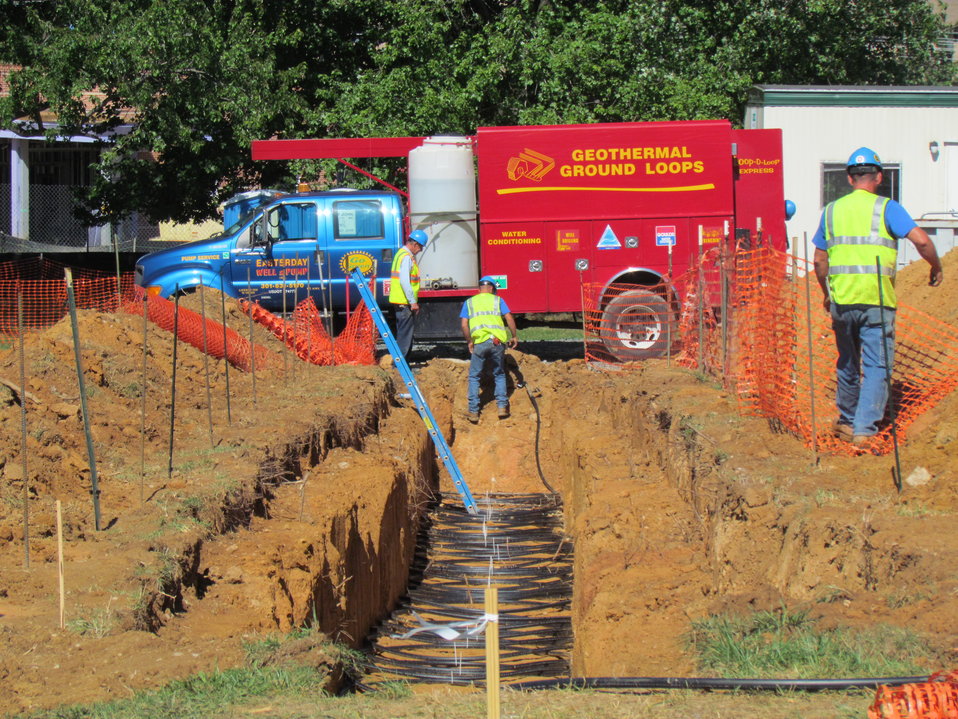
Net-Zero Energy Residential Test Facility - Photo showing the beginning of the installation process for the earth-coupled 'slinky' coil system.